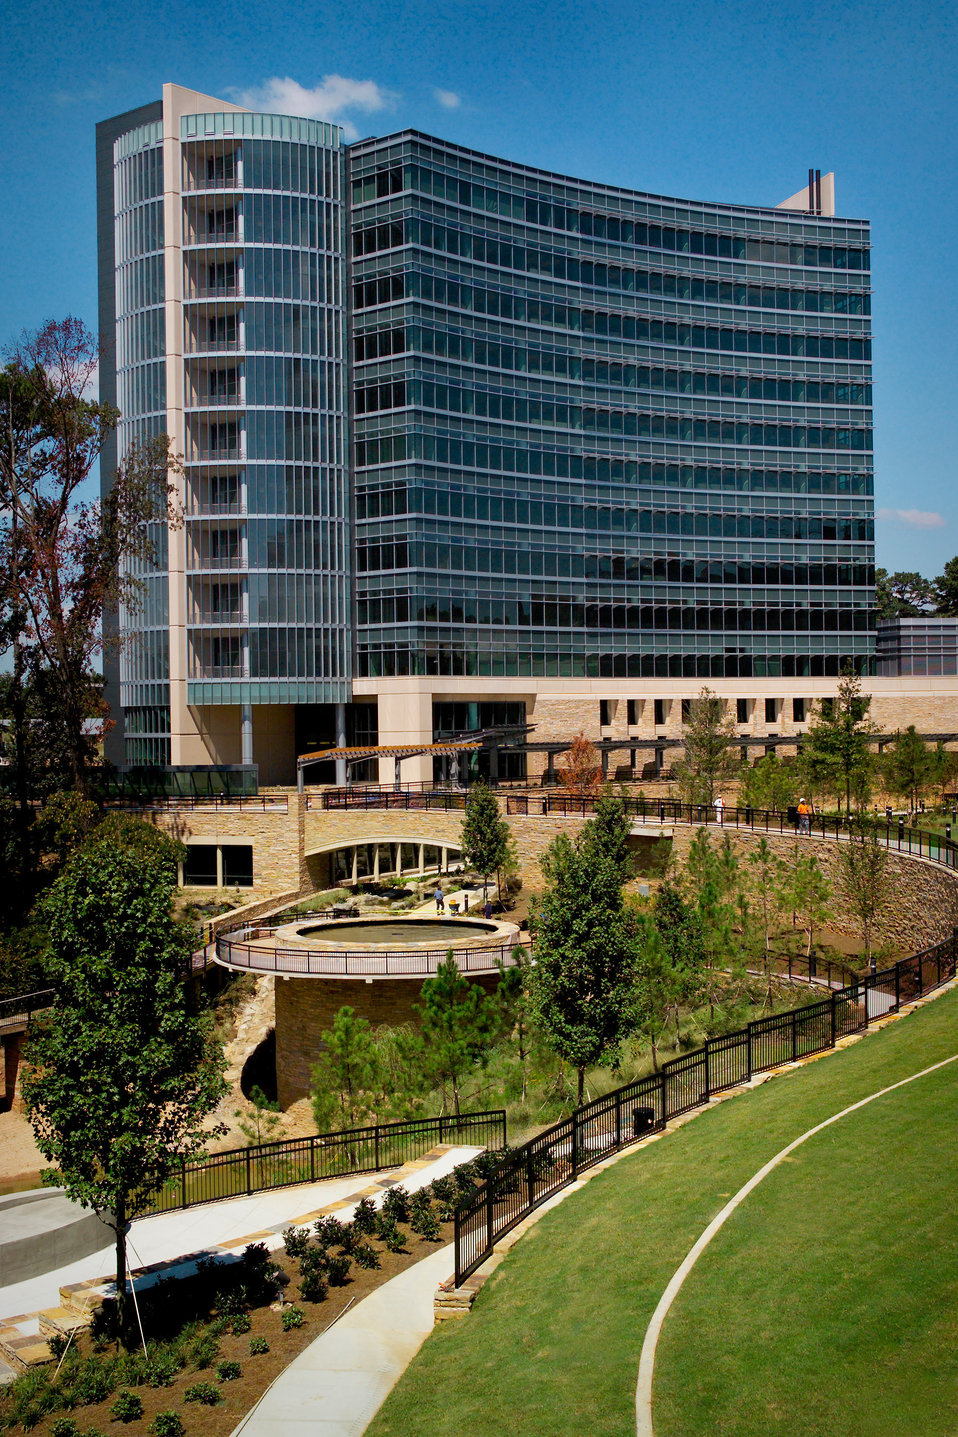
This photograph depicted an exterior view of Building 21, located at the Centers for Disease Control and Prevention, CDC, headquarters, also referred to as the Roybal Campus. This campus is situated in Atlanta, Georgia.